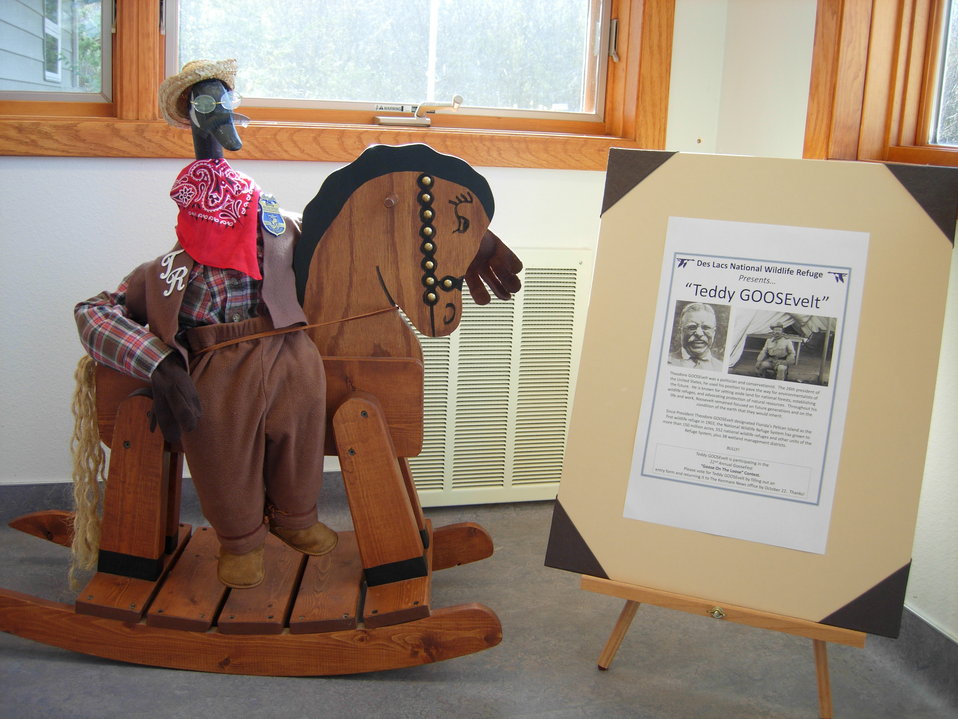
Teddy 'Goosevelt' at Des Lacs Refuge

Des Lacs Refuge participated in the Annual Kenmare 'Goose on the Loose' contest by entering refuge mascot 'Teddy GOOSEvelt!'